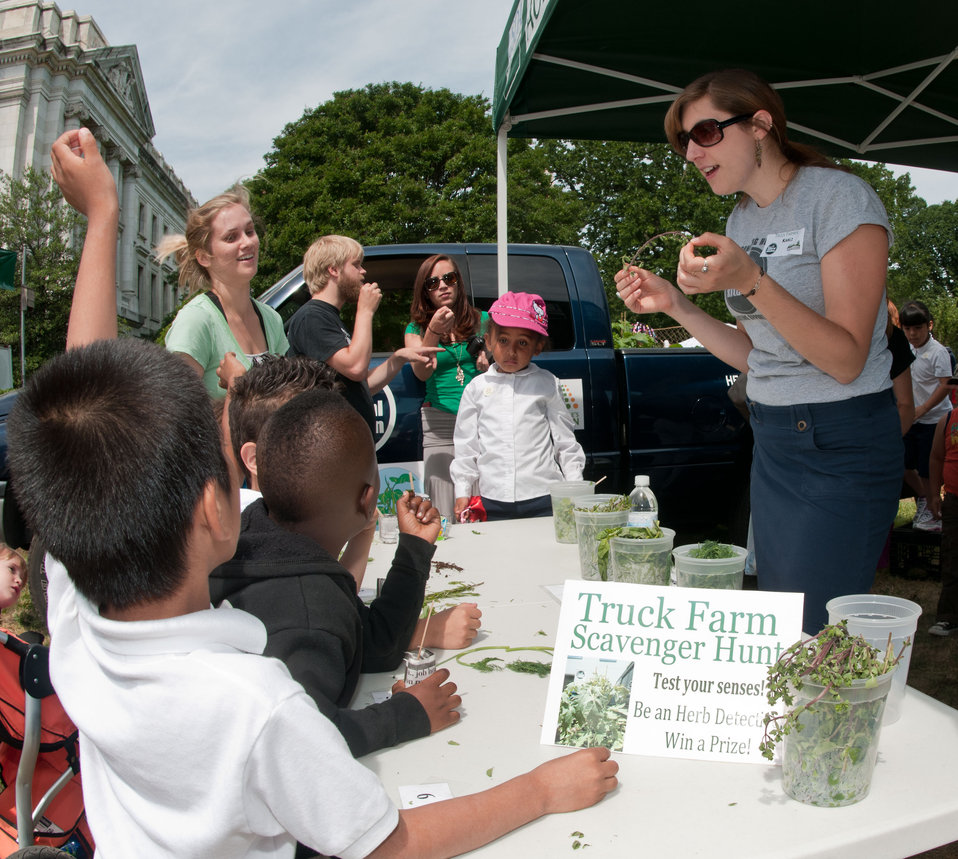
Karli Hurlebaus (right) teaches students from Powell Elementary School in Washington, DC, the difference between herbs and vegetables and the taste, feel and smell of herbs, during the opening day of the U.S. Department of Agriculture (USDA) Farmers Market and the official kick off of the People's Garden Friday activities on Friday, June 3, 2011 in Washington, DC, included the DC Central Kitchen Truck Farm and youth activities. More than 200 children participated. The adjacent USDA Farmers Market is located at the corner of 12th Street and Independence Avenue and will be open every Friday from 10:00 a.m. - 2:00 p.m. through November 18th. Special events will be happening every Friday at the market and at the People's Garden all season.